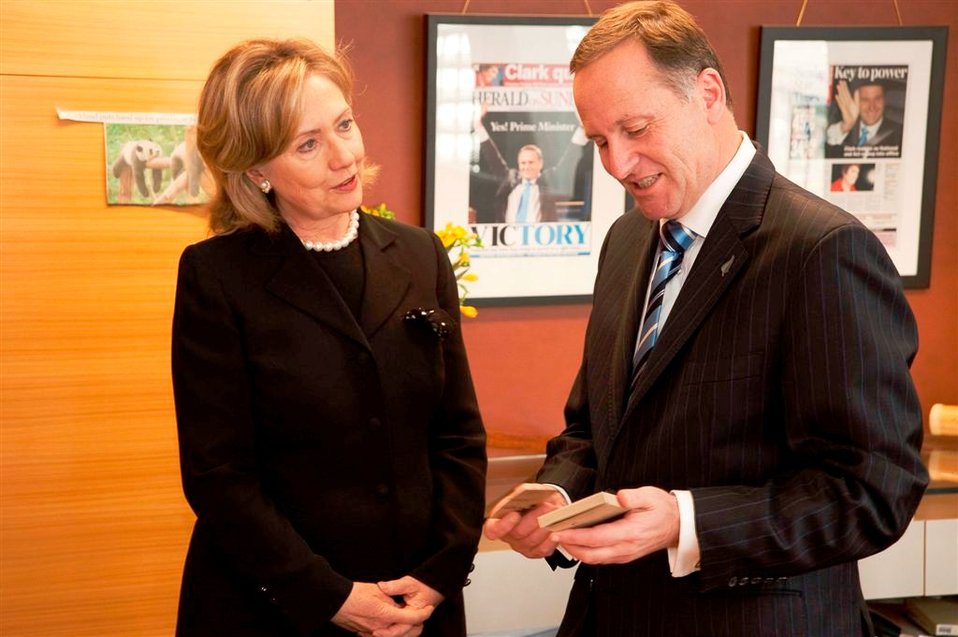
New Zealand Prime Minister Key Looks at a Gift Given By the Secretary

New Zealand Prime Minister John Key looks at a gift given by U.S. Secretary of State Hillary Rodham Clinton on behalf of the United States in the Prime Minister's office in Wellington, New Zealand, on November 4, 2010.